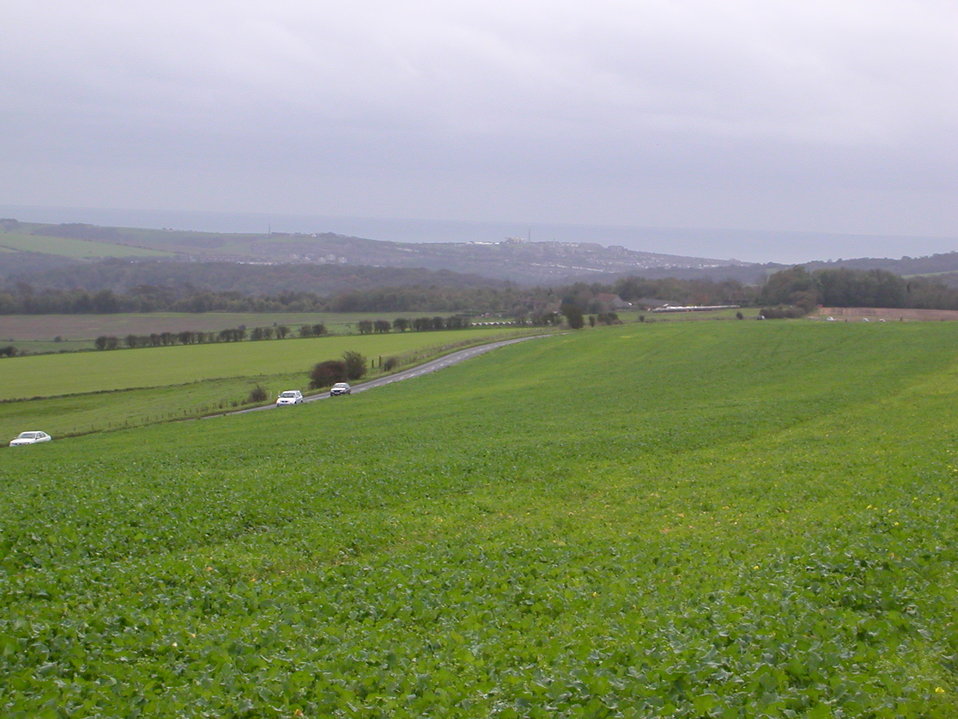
View to the south from summit of Ditchling Beacon.